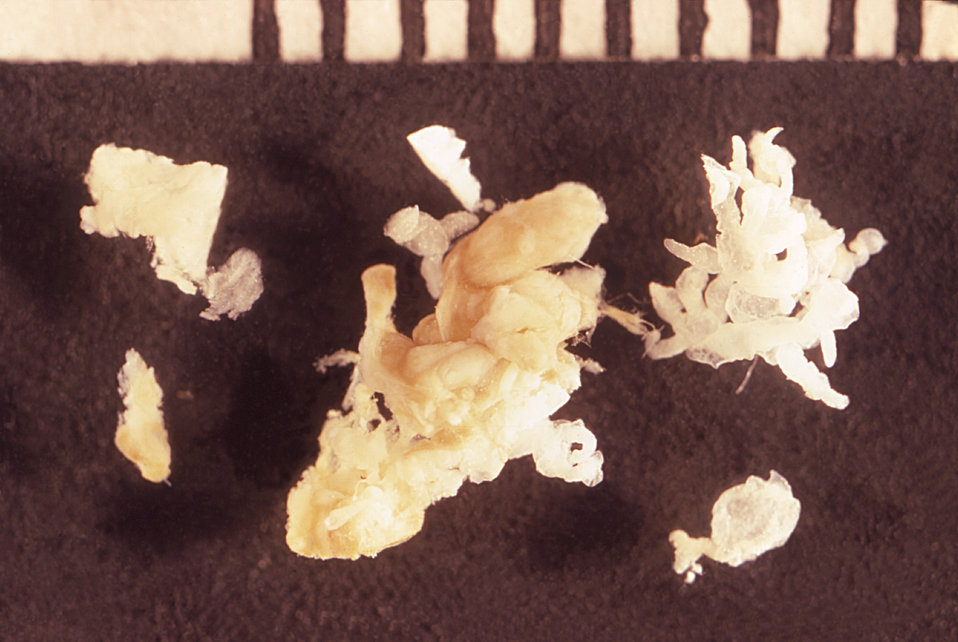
This photograph depicted the strobilocercus, or larval stage of an unidentified tapeworm of the order Cyclophyllidea. Families that are members of this order include Dipylidiidae, i.e., cucumber tapeworm and double-pore tapeworm, Hymenolepidadae, Taeniidae, i.e., livestock parasites, and Anoplocephalidae, i.e., horse and ruminant tapeworms.